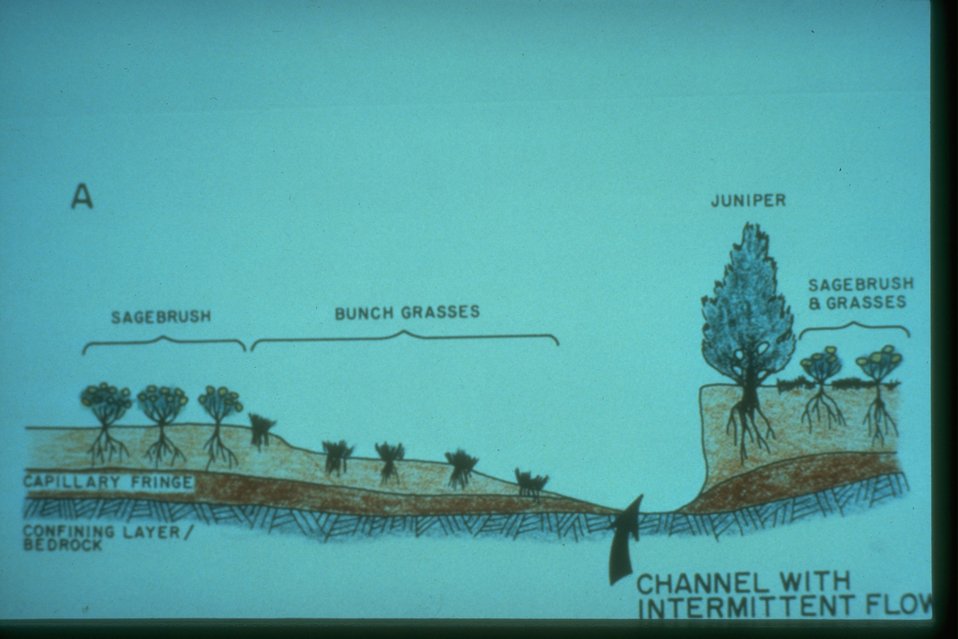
Riparian artwork diagram.